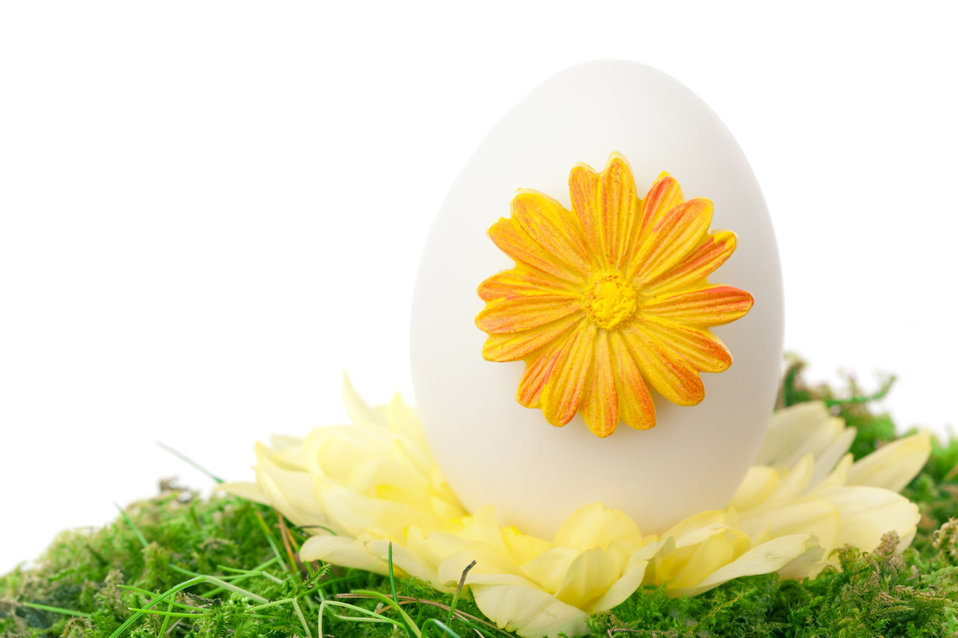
Easter egg

White easter egg with spring decoration isolated on white background.